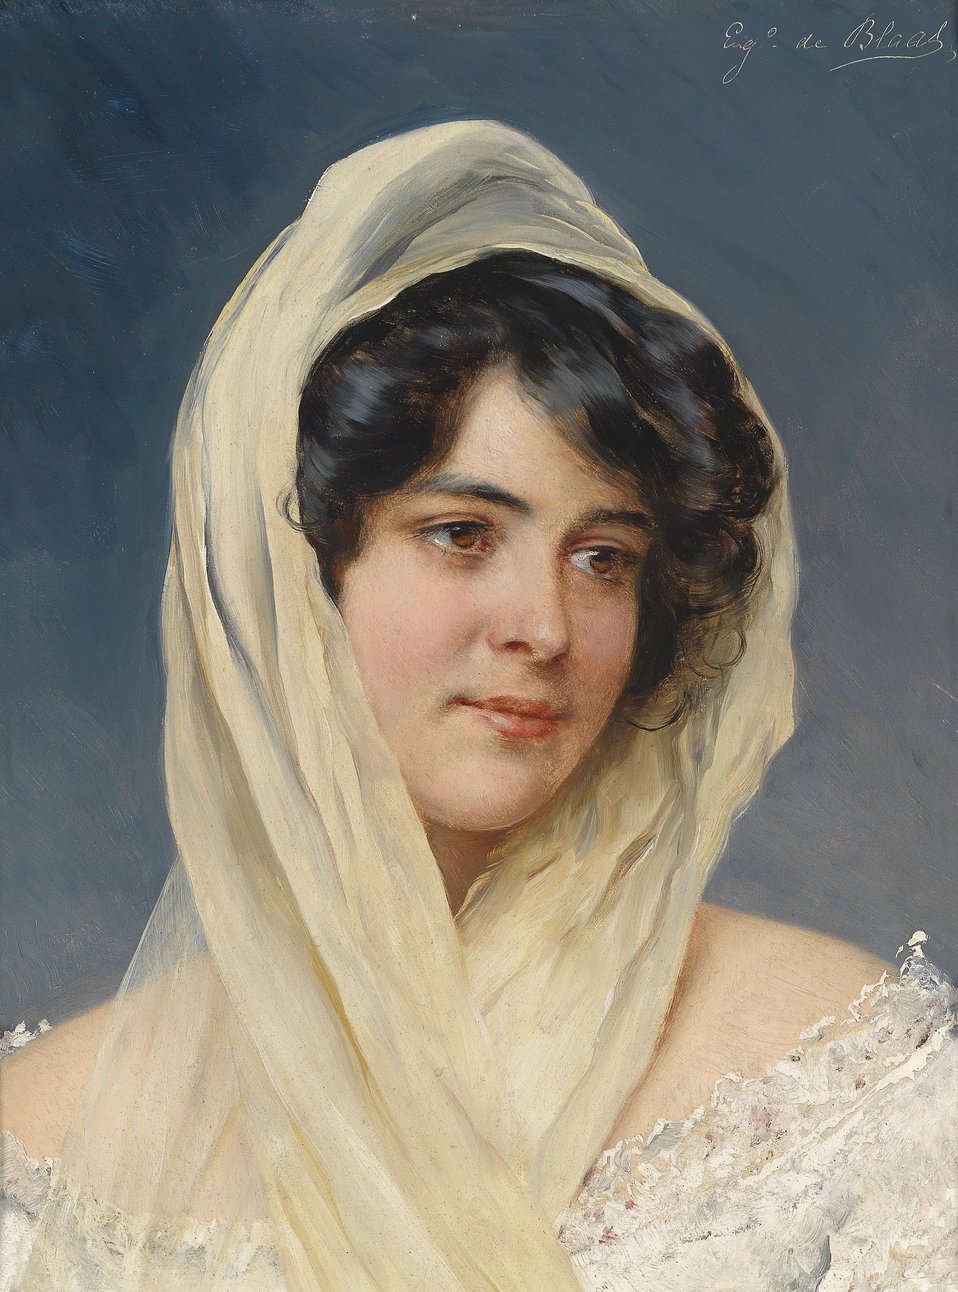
Bildnis einer jungen Dame mit Schleier, signiert 'Eug. de Blaas', Öl auf Holz, 35,5 x 26,3 cm